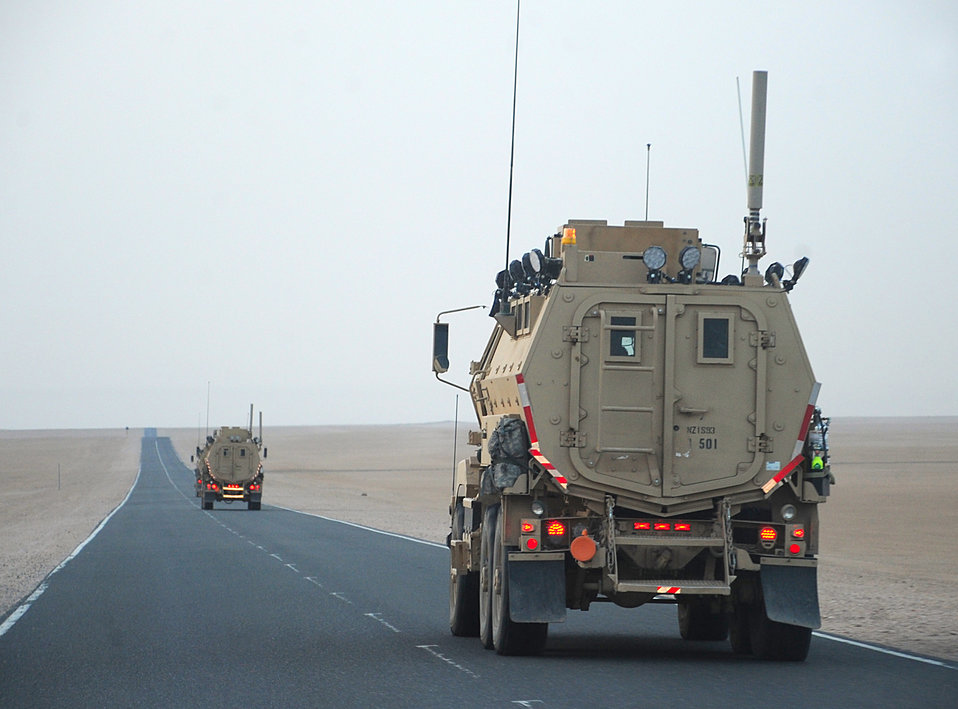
Convoy in Southwest Asia

Airmen return to base following a convoy mission May 4, 2011, in Southwest Asia.